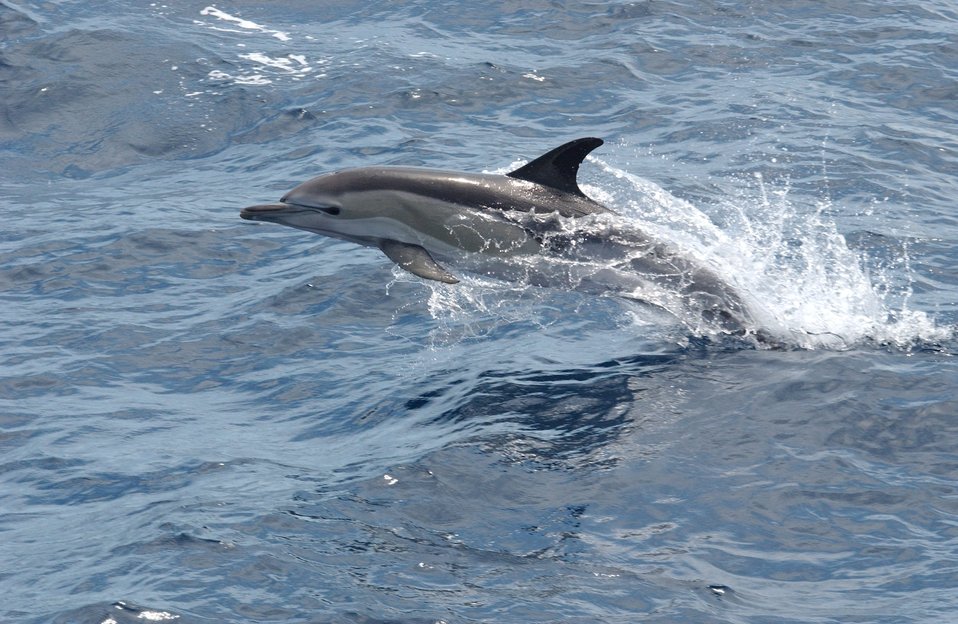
Common dolphin